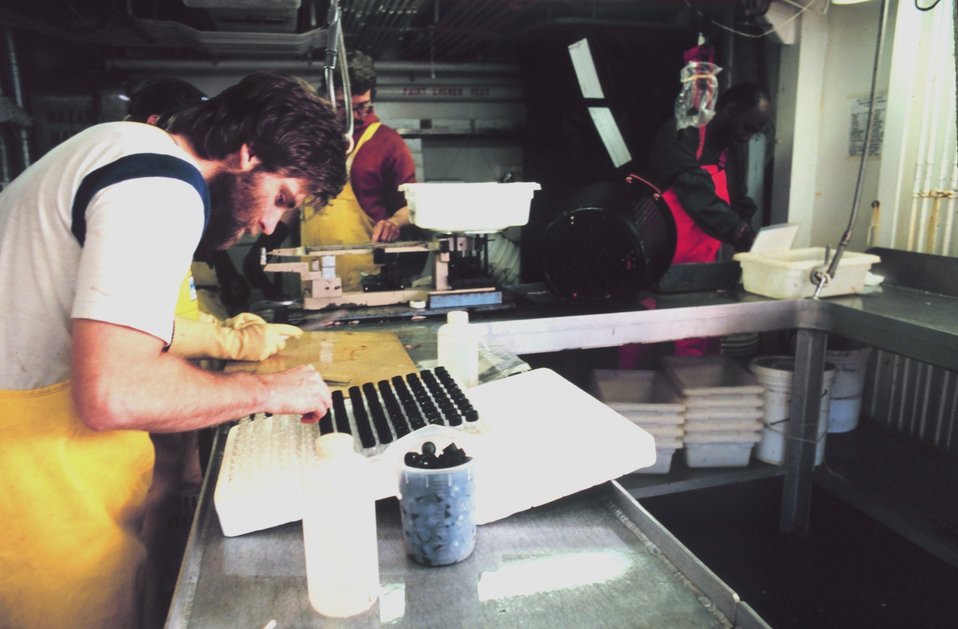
Scientist working with tissue sampling vials